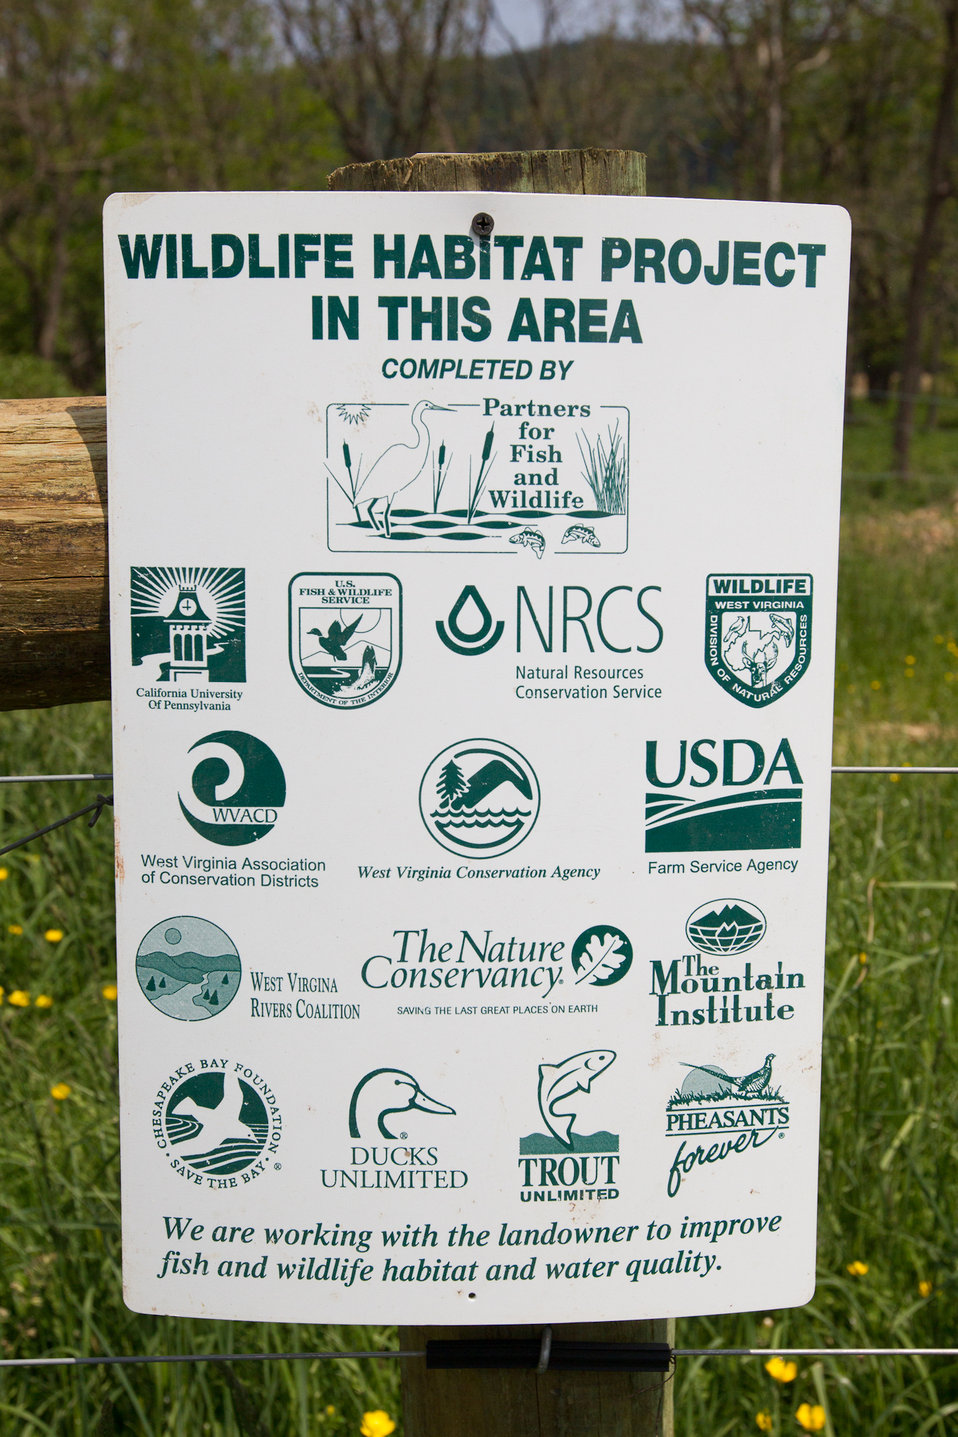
Celebrating 1 Million Feet of Conservation Fence in WV

Partners for Fish and Wildlife Program